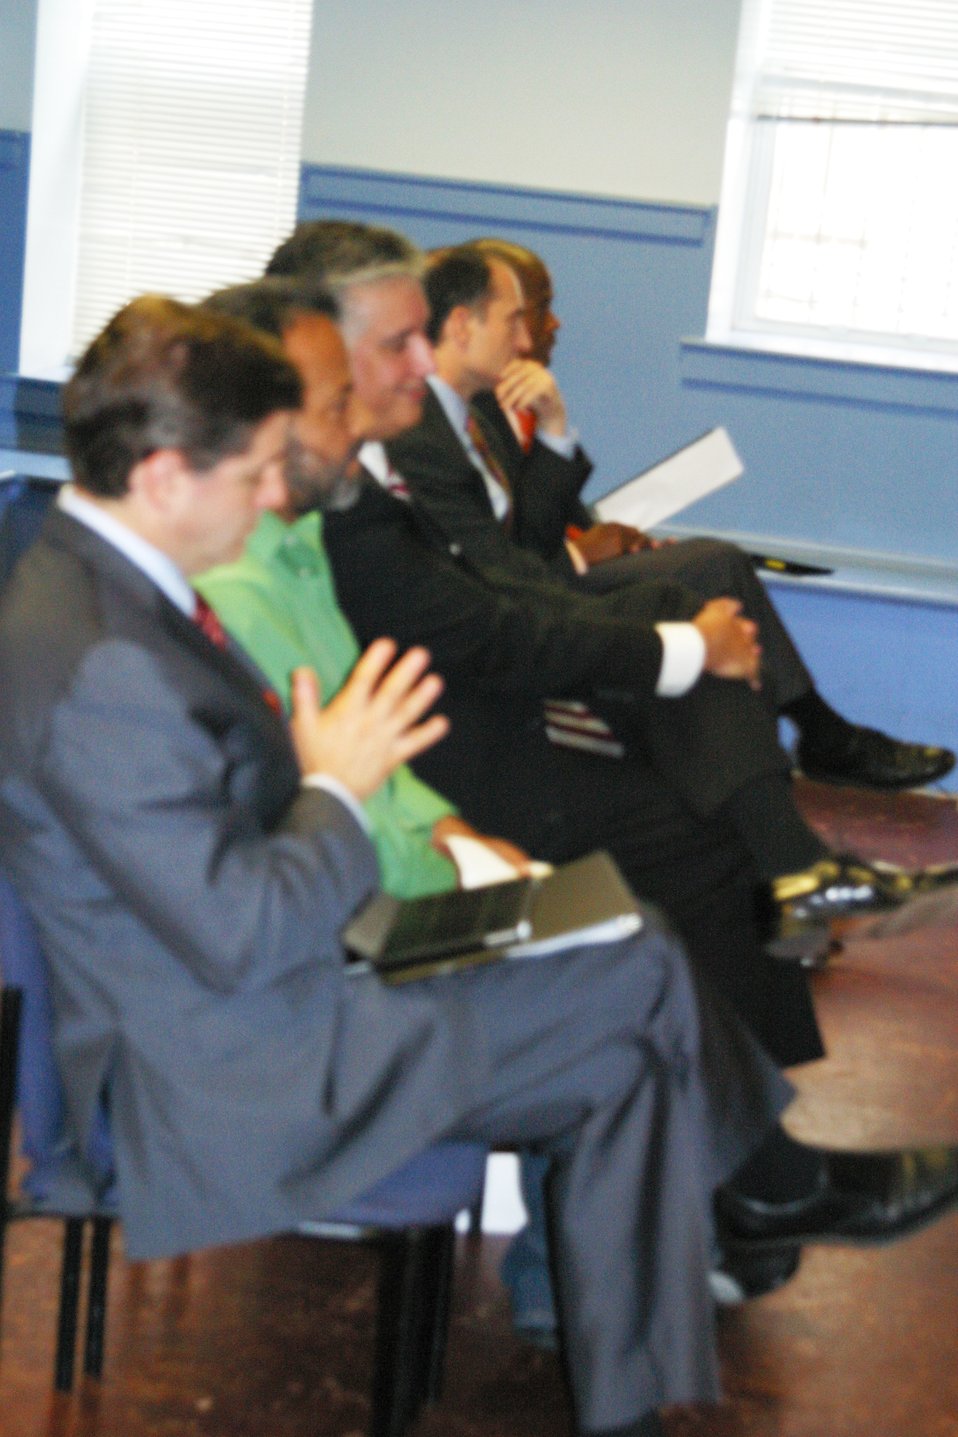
Connect 2 Compete: LULAC 8.7.12

FCC Chairman Julius Genachowski joined representatives from Connect2Compete (C2C), Redemtech, the League of United Latin American Citizens (LULAC), and the Latin American Youth Center (LAYC) to announce the launch of a nationwide computer recycling and donation effort to support C2C’s efforts to close the digital divide.